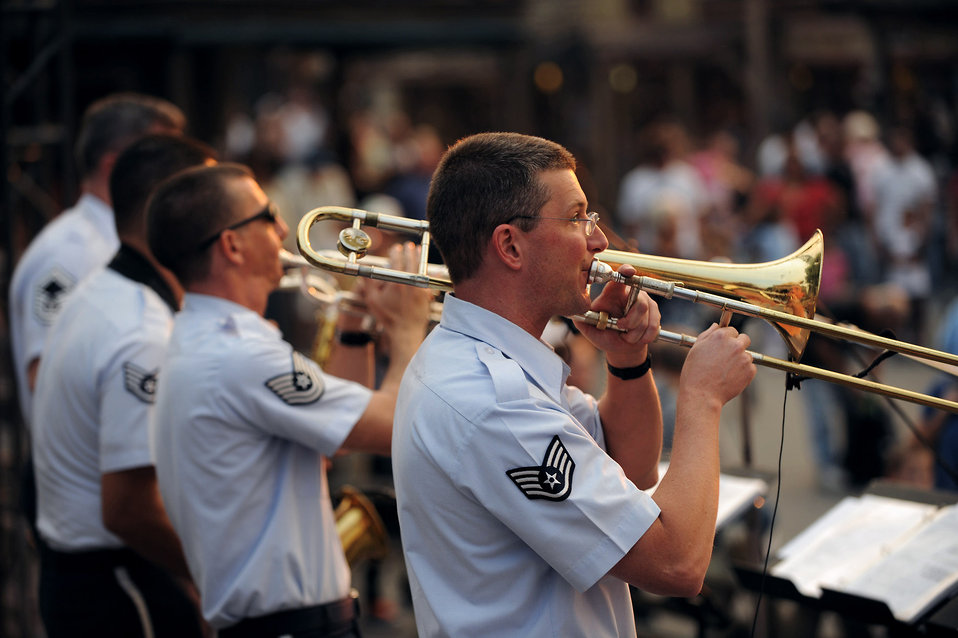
Bands spread Air Force message through music

Members of the Air National Guard Band of The Southwest perform Nov. 15 at Knott's Berry Farm in Los Angeles. The band is performing during Air Force Week Los Angeles, which is an event designed to educate the local population about the Air Force's capabilities and missions through various activities and exhibitions all over the Los Angeles area.